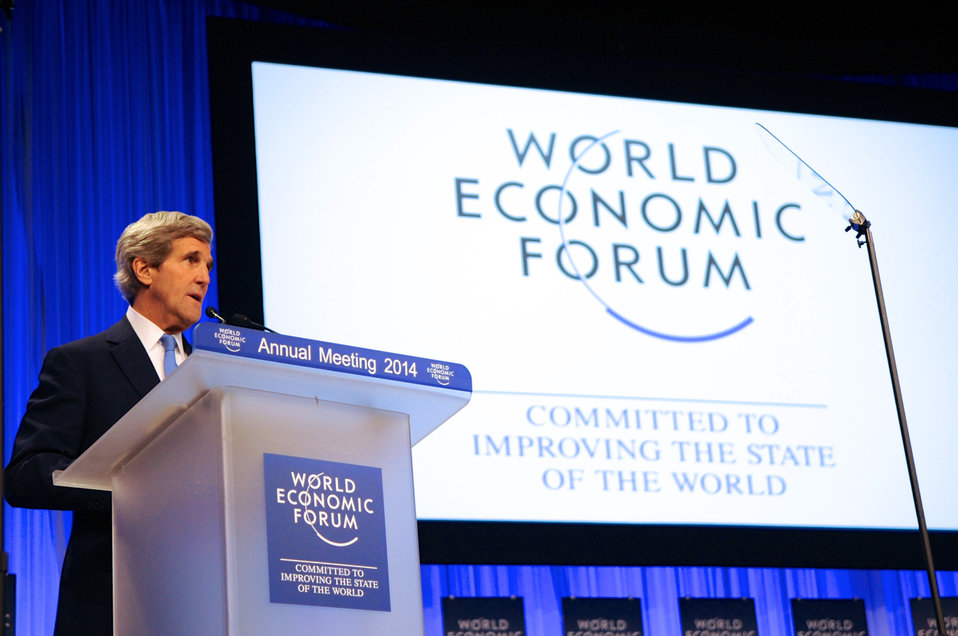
Secretary Kerry Delivers Keynote Address to Attendees at 2014 World Economic Forum

U.S. Secretary of State John Kerry delivers the keynote address at the 2014 World Economic Forum in Davos, Switzerland, on January 24, 2014.